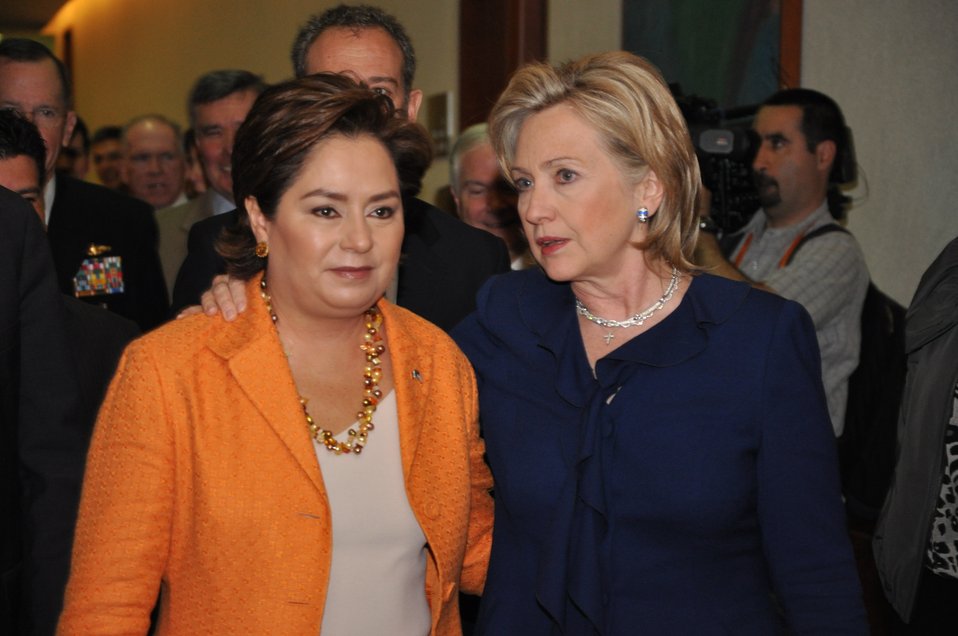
Secretary Clinton With Mexican Secretary of Foreign Affairs Ambassador Patricia Espinosa

U.S. Secretary of State Hillary Rodham Clinton is greeted by Mexican Secretary of Foreign Affairs Ambassador Patricia Espinosa, Secretariat of Foreign Affairs, Mexico City, March 25, 2010.